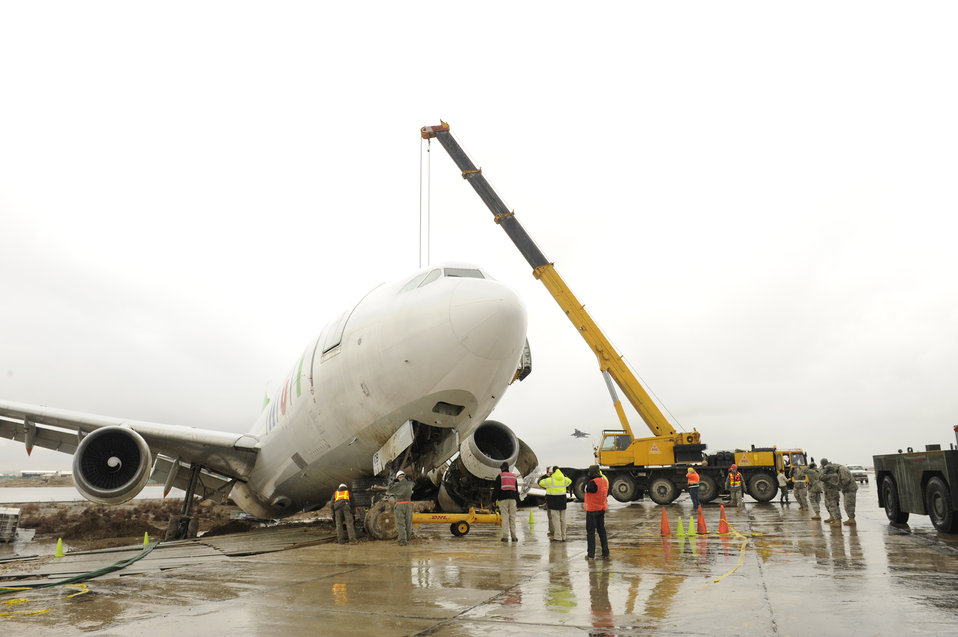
Bagram Airmen respond to emergency aircraft landing

Airmen and contractors prepare to move an Airbus A300 after its crew preformed an emergency landing March 3, 2010, at Bagram Airfield, Afghanistan.